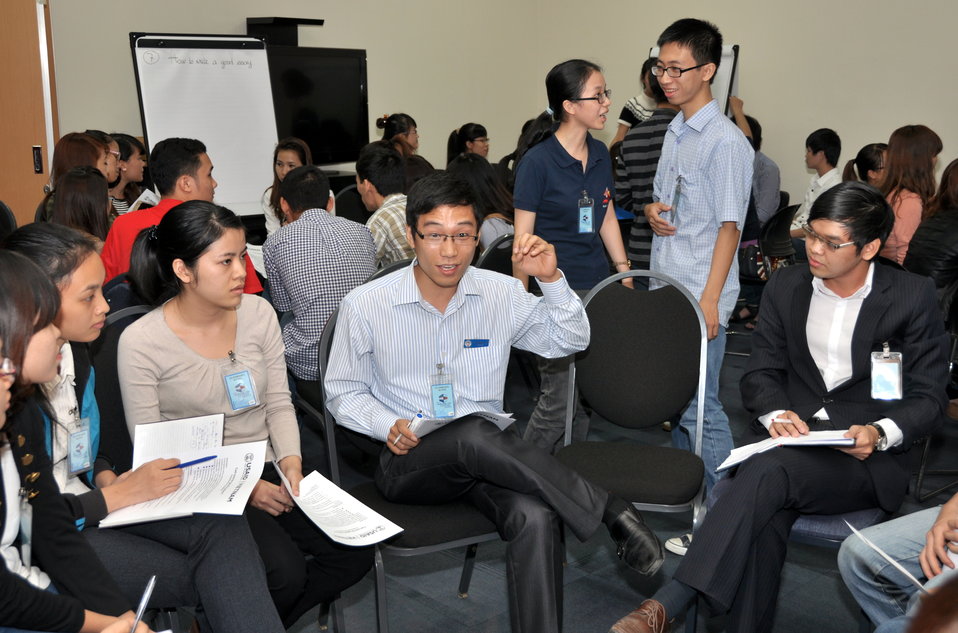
Students join the ‘USAID and Higher Education in Vietnam’ talk

Photo: @USAIDVietnam, November 19, 2012